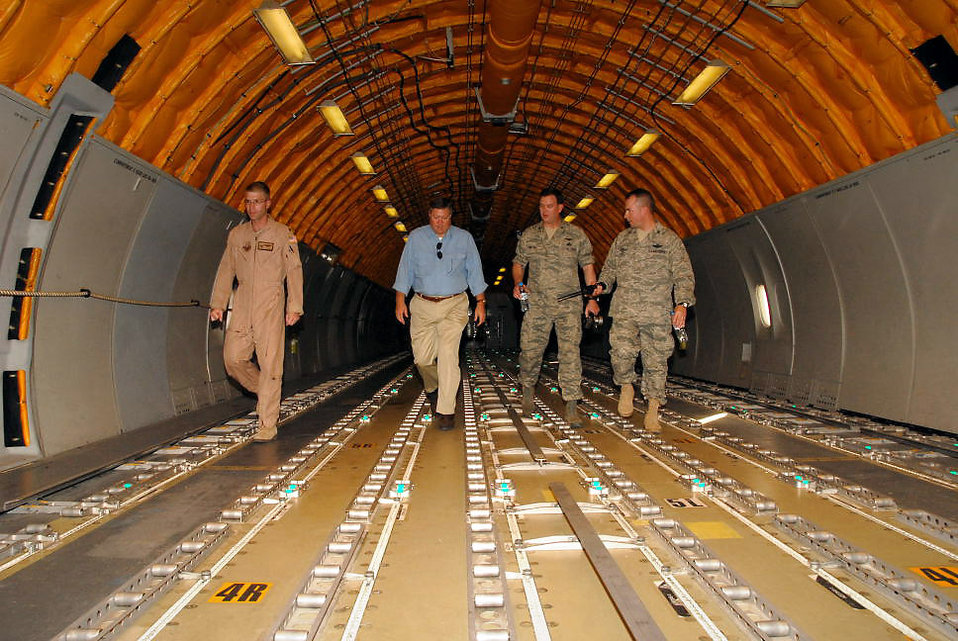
SECAF gains insight into diverse missions at deployed wing

Secretary of the Air Force Michael B. Donley tours a KC-10 Extender with Col. Paul Murphy and Lt. Col. Joel Jackson at an air base in Southwest Asia Oct. 12. The secretary visited the 380th Air Expeditionary Wing to gain a better understanding of the infrastructure and capabilities of one the smallest but most diverse bases in the Air Forces Central area of responsibility.